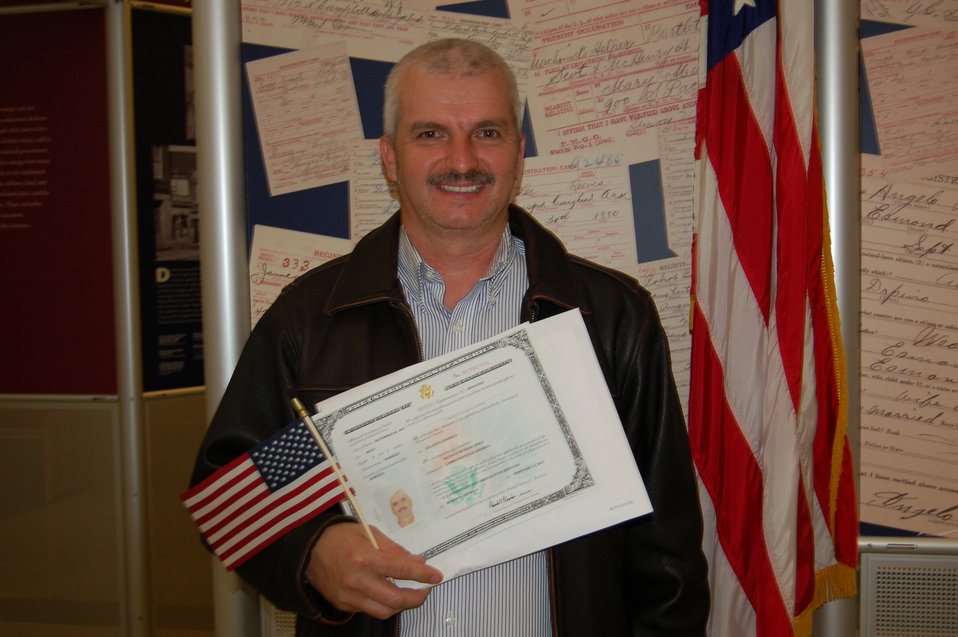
New Citizens